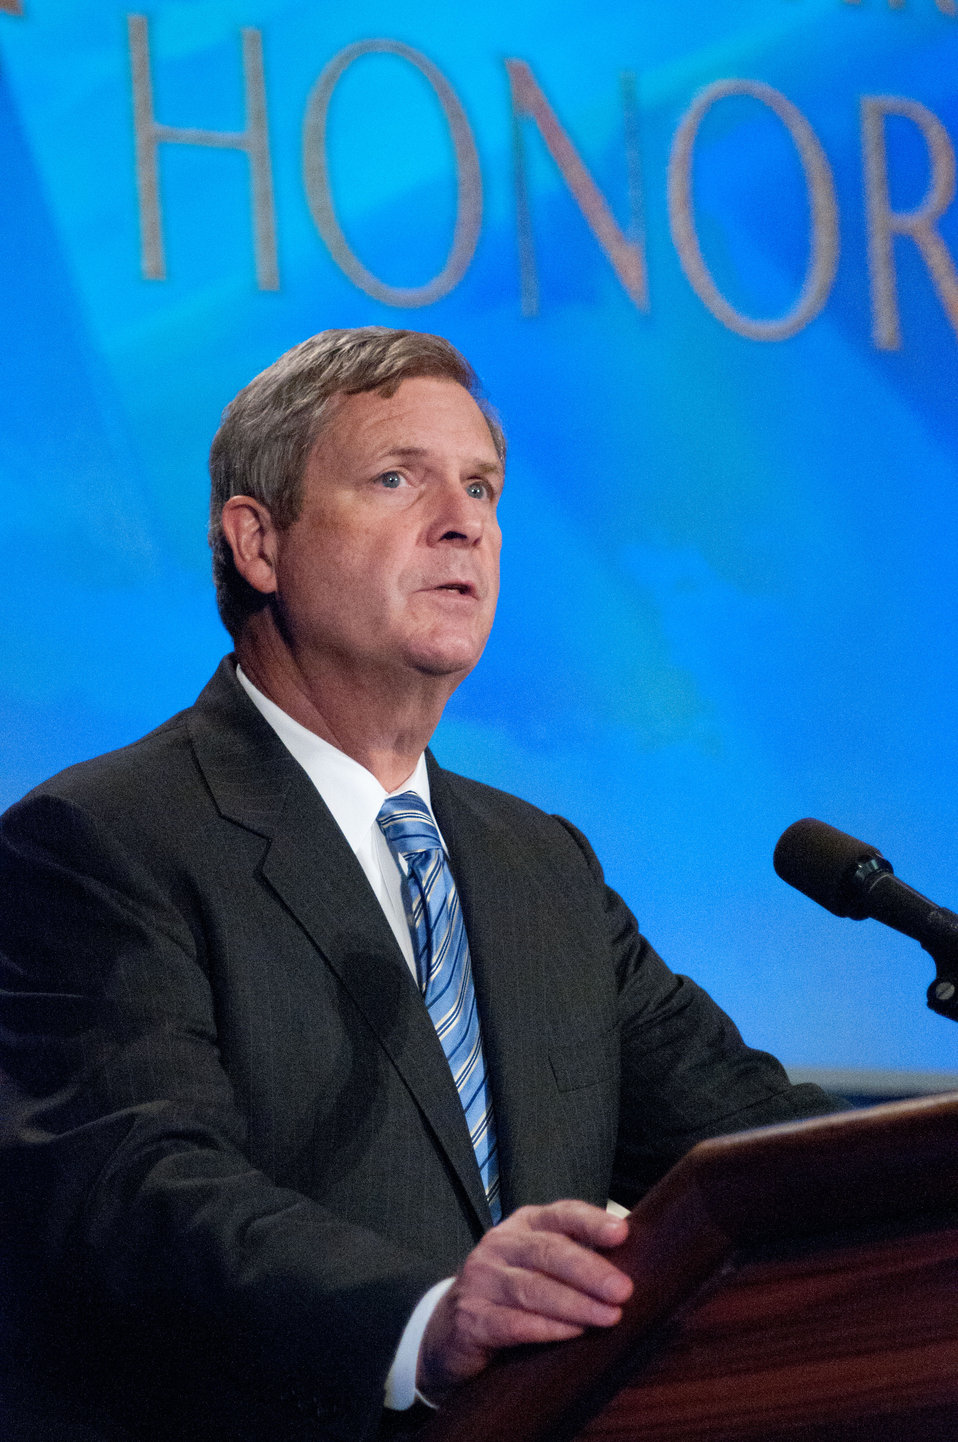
Agriculture Secretary Tom Vilsack makes remarks during the United States Department of Agriculture 63rd Secretary’s Annual Honor Awards ceremony held in the Thomas Jefferson Auditorium in Washington, D.C. on Wednesday, September 14, 2011.